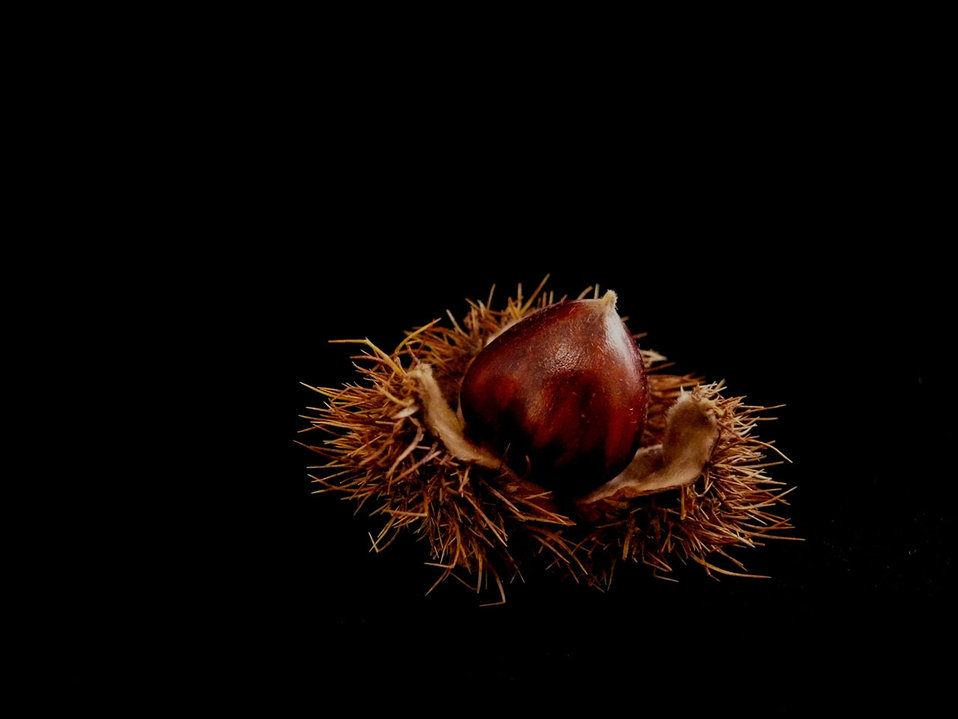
Nut on black backround.